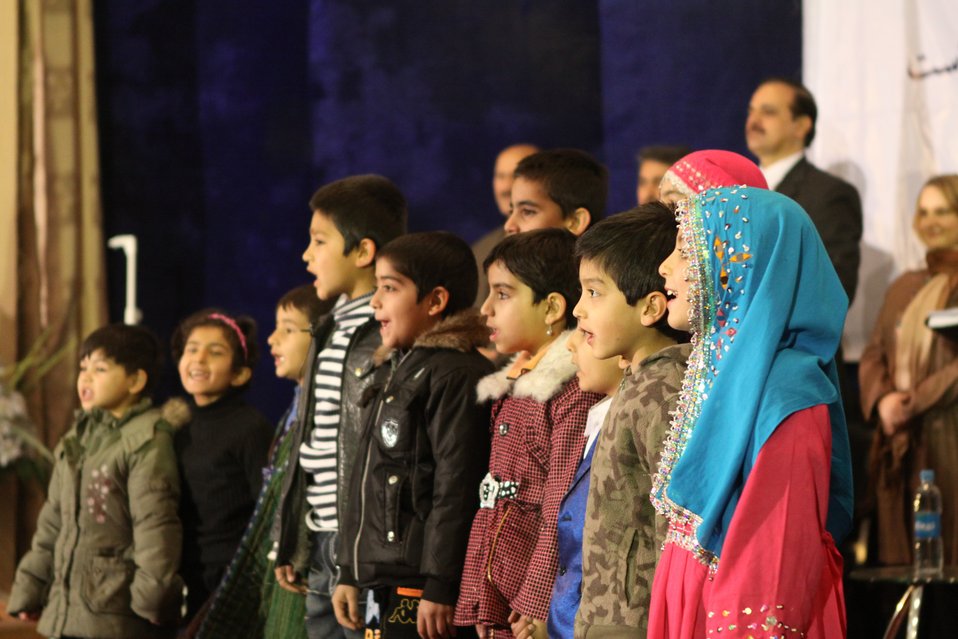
Community Health Workers Celebrated

Kabul, Afghanistan | December 5, 2010 — In support of the United Nations designated International Volunteer Day for Economic and Social Development, Afghanistan’s Ministry of Public Health celebrated its annual Community Health Worker Day today. Acting Minister of Public Health Dr. Suraya Dalil, USAID Senior Deputy Mission Director Robert Hellyer, other government officials, and international donors joined in recognizing the critical contribution of community health workers in Afghanistan and encouraging them to continue their voluntary support to their communities.
The event praised the contributions of the more than 22,000 volunteers throughout the country who deliver community level health-education, counseling, and services out of village health posts located in private homes. The Ministry of Public Health envisioned that community-based healthcare programs will actively encourage communities and families to adopt healthy lifestyles and behaviors, and provide families access to high quality and socially acceptable preventative medicine and life-saving services.
“We have 22,000 community health workers in Afghanistan that are able to implement the basic and standard medicines. They all have been trained through a job description,” said Minister Dalil. Addressing the health workers, she added, “I am proud and feel powerful that I have people like you.”
USAID-funded health projects collaborate closely with the Ministry of Public Health to improve the health and nutritional status of Afghans, provide quality primary healthcare, and promote healthy behaviors at the community and household-levels. USAID supported the training of more than 9,000 of the volunteer community health workers currently working in Afghanistan.
“On behalf of the American people, I congratulate the Community Health Workers for their diligence to gain the skills and knowledge necessary to serve their communities in this important role,” said USAID Senior Deputy Mission Director Hellyer. “USAID strongly supports community based health care and believes that quality community-based health services are essential to reaching Afghanistan’s Millennium Development Goals.”
To support the Basic Package of Health Services, USAID assisted in developing the community health worker training manual, helped train community health worker supervisors and master-trainers, facilitated in-service training, and produced and developed reporting tools, job aids, and education materials.